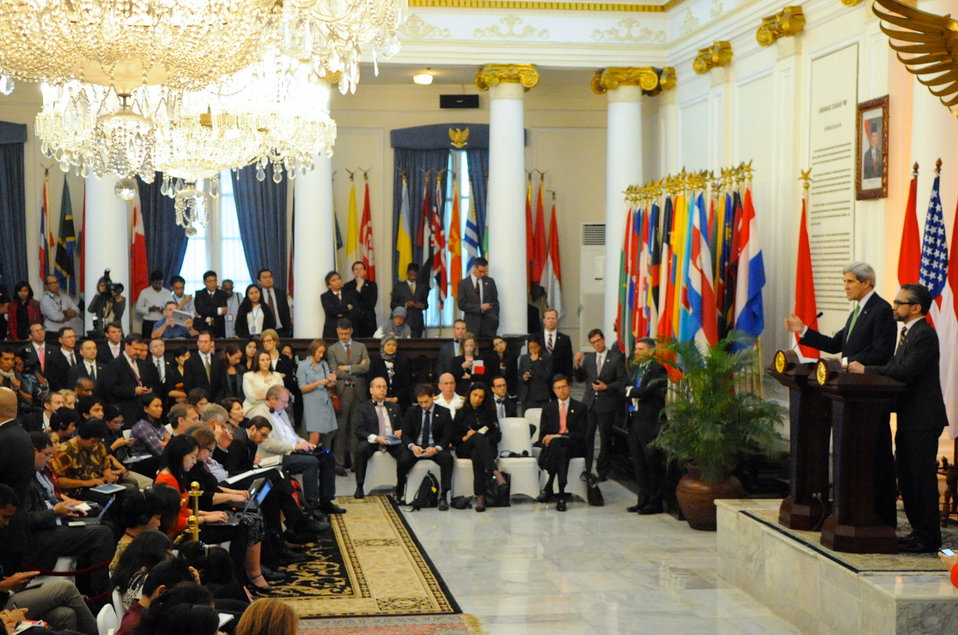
Secretary Kerry and Indonesian Foreign Minister Natalegawa Hold News Conference in Jakarta

U.S. Secretary of State John Kerry and Indonesia Foreign Minister Marty Natalegawa hold a news conference after a bilateral meeting in Jakarta, Indonesia on February 17, 2014.